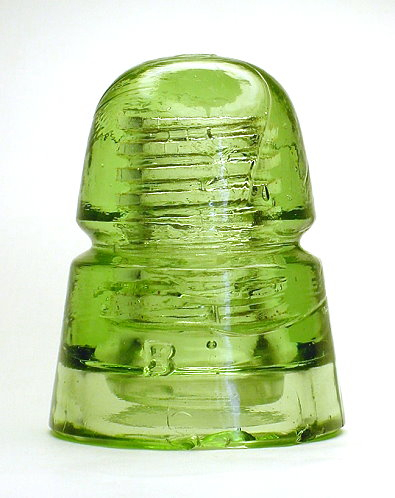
An unusual and beautiful Beehive (CD 145) in a shade of Apple Green - circa 1900 Author:Lee Brewer; Source: Picture taken by Lee Brewer:This image may be used by anyone for any purpose.